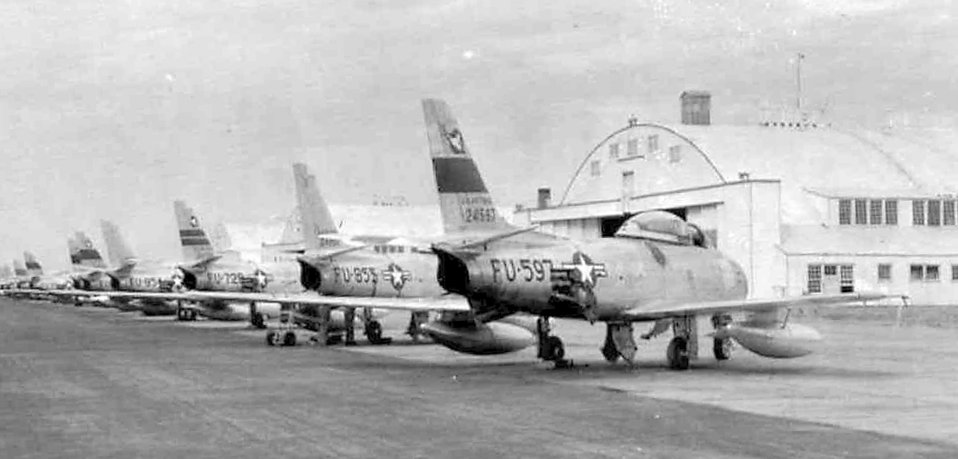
F-86F Sabres

The 50th Fighter-Bomber Wing flew F-86F Sabres out of Hahn Air Base, West Germany, during the early years of the Cold War. The 50th Space Wing at Schriever Air Force Base, Colo., traces its history back to the 50th FBW.